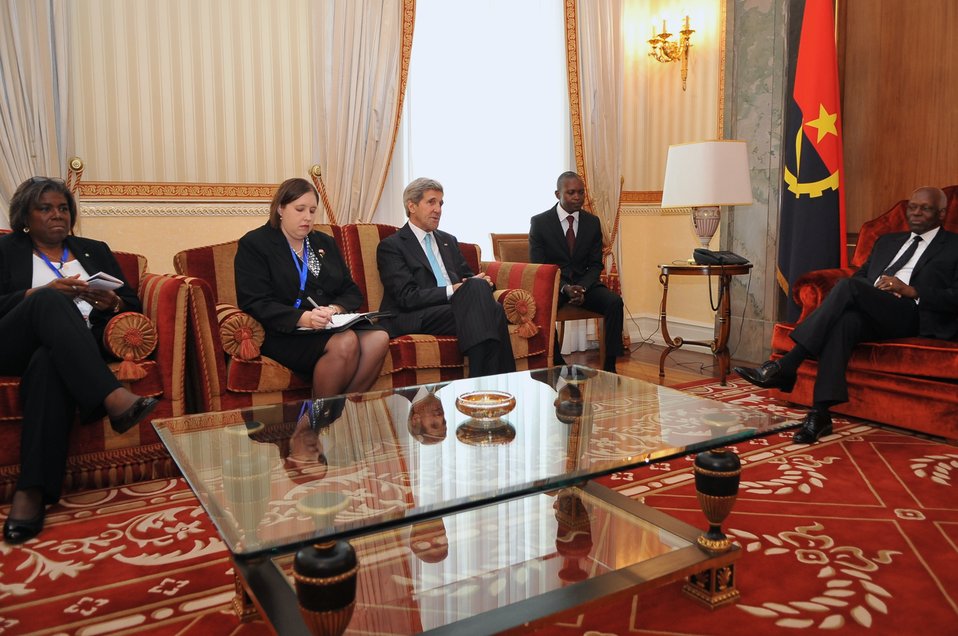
Secretary Kerry, Assistant Secretary Thomas-Greenfield Meet Angolan President dos Santos in Luanda

U.S. Secretary of State John Kerry, joined by U.S. Assistant Secretary of State for African Affairs Linda Thomas-Greenfield and Embassy Luanda Charge d’Affaires Heather Merritt, chats with Angolan President Jose Eduardo do Santos at the beginning of a bilateral meeting at the Presidential Palace in Luanda on May 5, 2014.